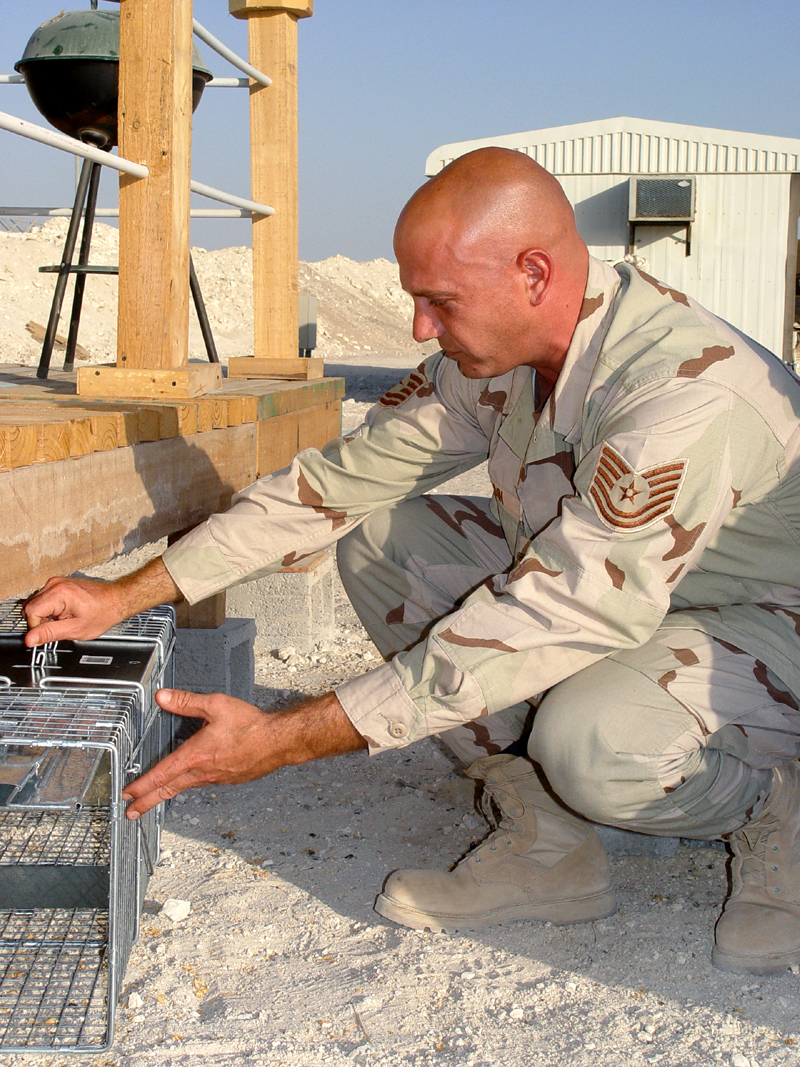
Setting a trap

OPERATION ENDURING FREEDOM -- Tech. Sgt. Frank Flodin sets a trap to humanely and safely capture feral cats. It is part of a program at this forward-operating location in Southwest Asia to prevent the spread of fleas and other parasites. Flodin is a pest management technician deployed to the 380th Expeditionary Civil Engineer Squadron from Barksdale Air Force Base, La.